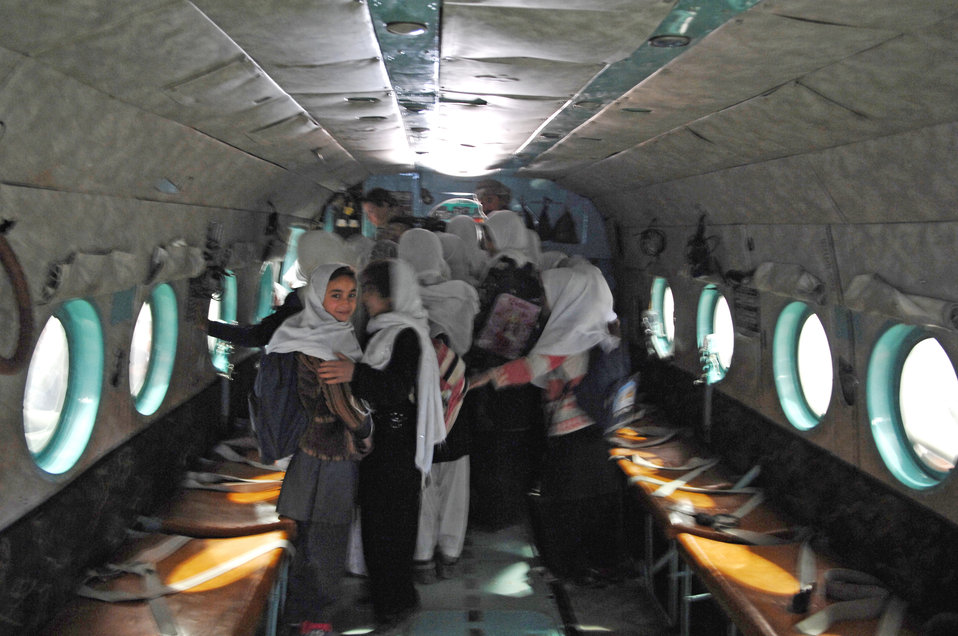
Afghan children visit Kandahar, see partnership between Afghans, coalition forces

Afghan students tour an Mi-17 helicopter Dec. 31, 2009, during their visit to the Afghan National Army Air Corps hangar.